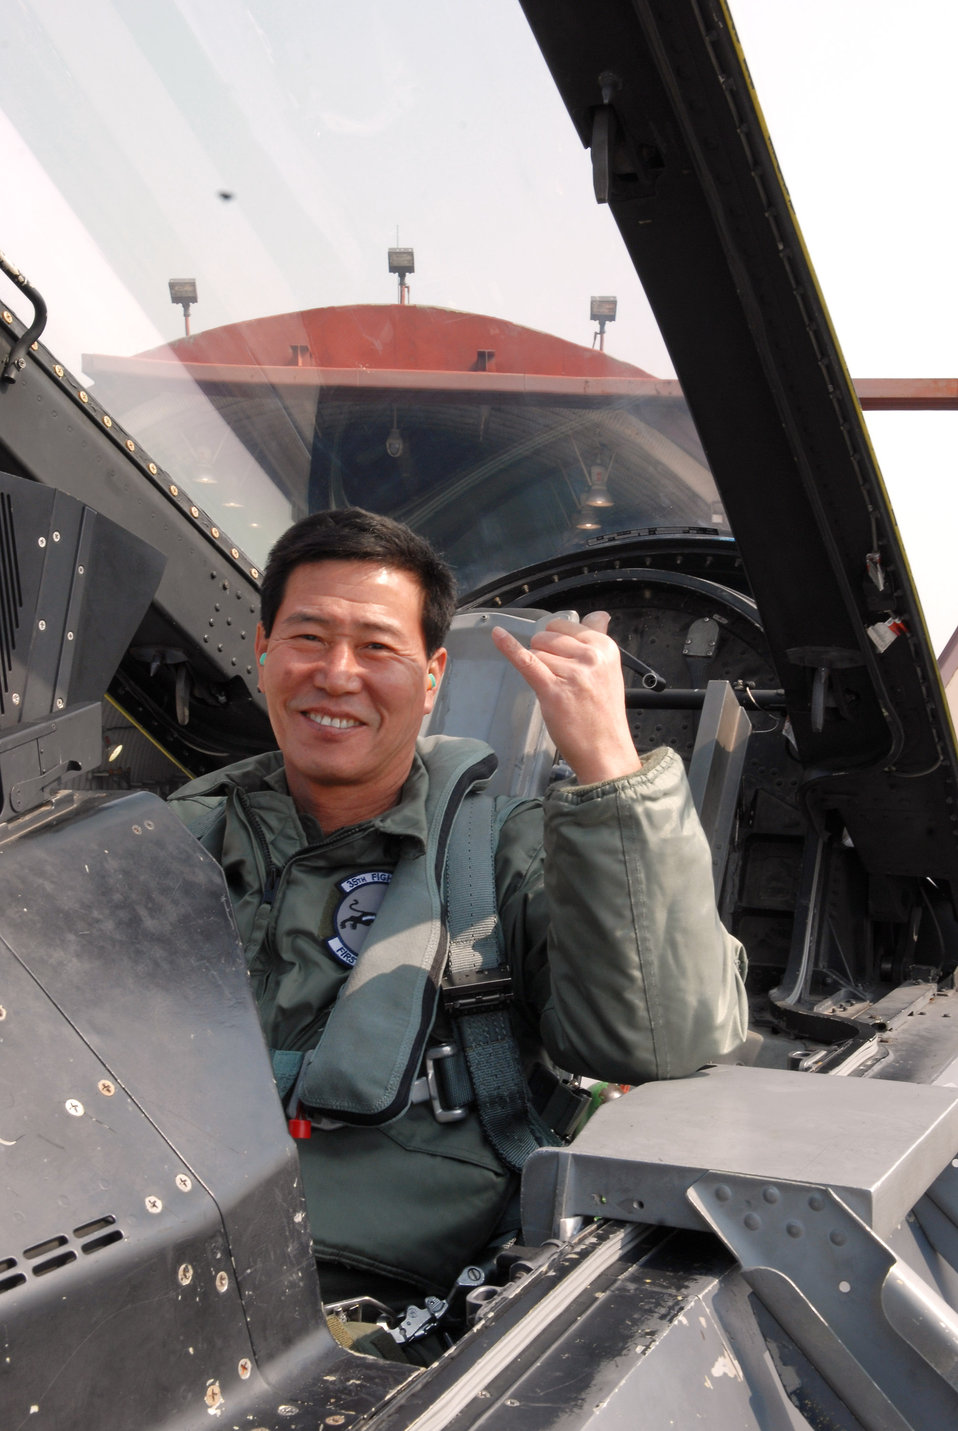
Korean VIP goes for a ride

Kim Myung Jung, Gunsan City's Korean National Police chief, expresses his excitement after taking a high-speed taxi ride in an F-16 Fighting Falcon March 4 at Kunsan Air Base, Republic of Korea. Mr. Kim participated in the base's Pilot for a Day program which is part of United States Force Korea's Good Neighbor Program.